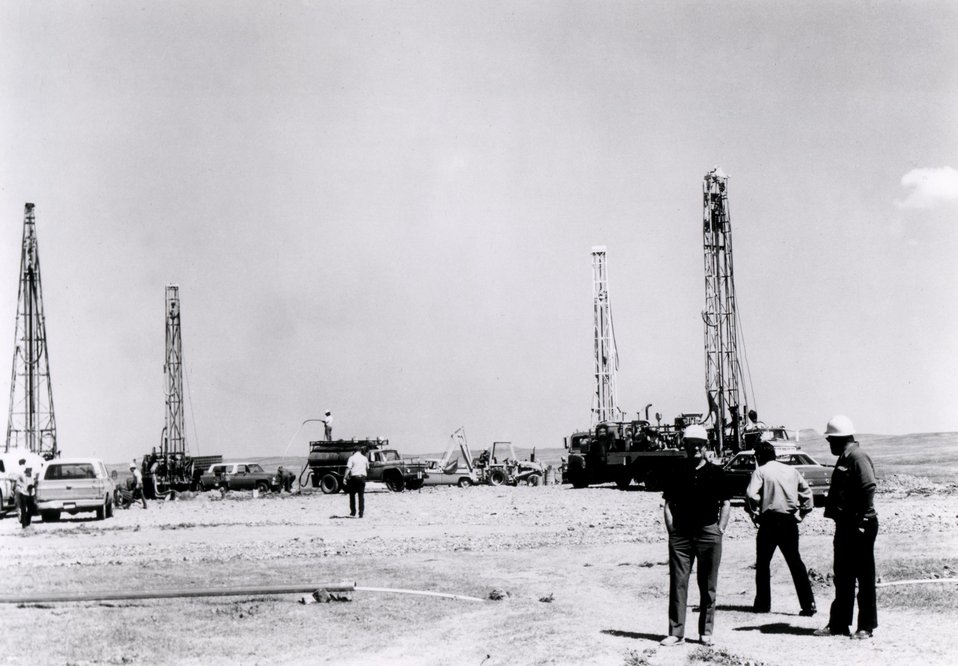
Shows the site near Hoe Creek, 20 miles south of Gillette, Wyoming, where an underground coal gasification experiment is being planned for late November, 1975, as part of a nation program of the Energy Research and Development Administration. Circa 1975.